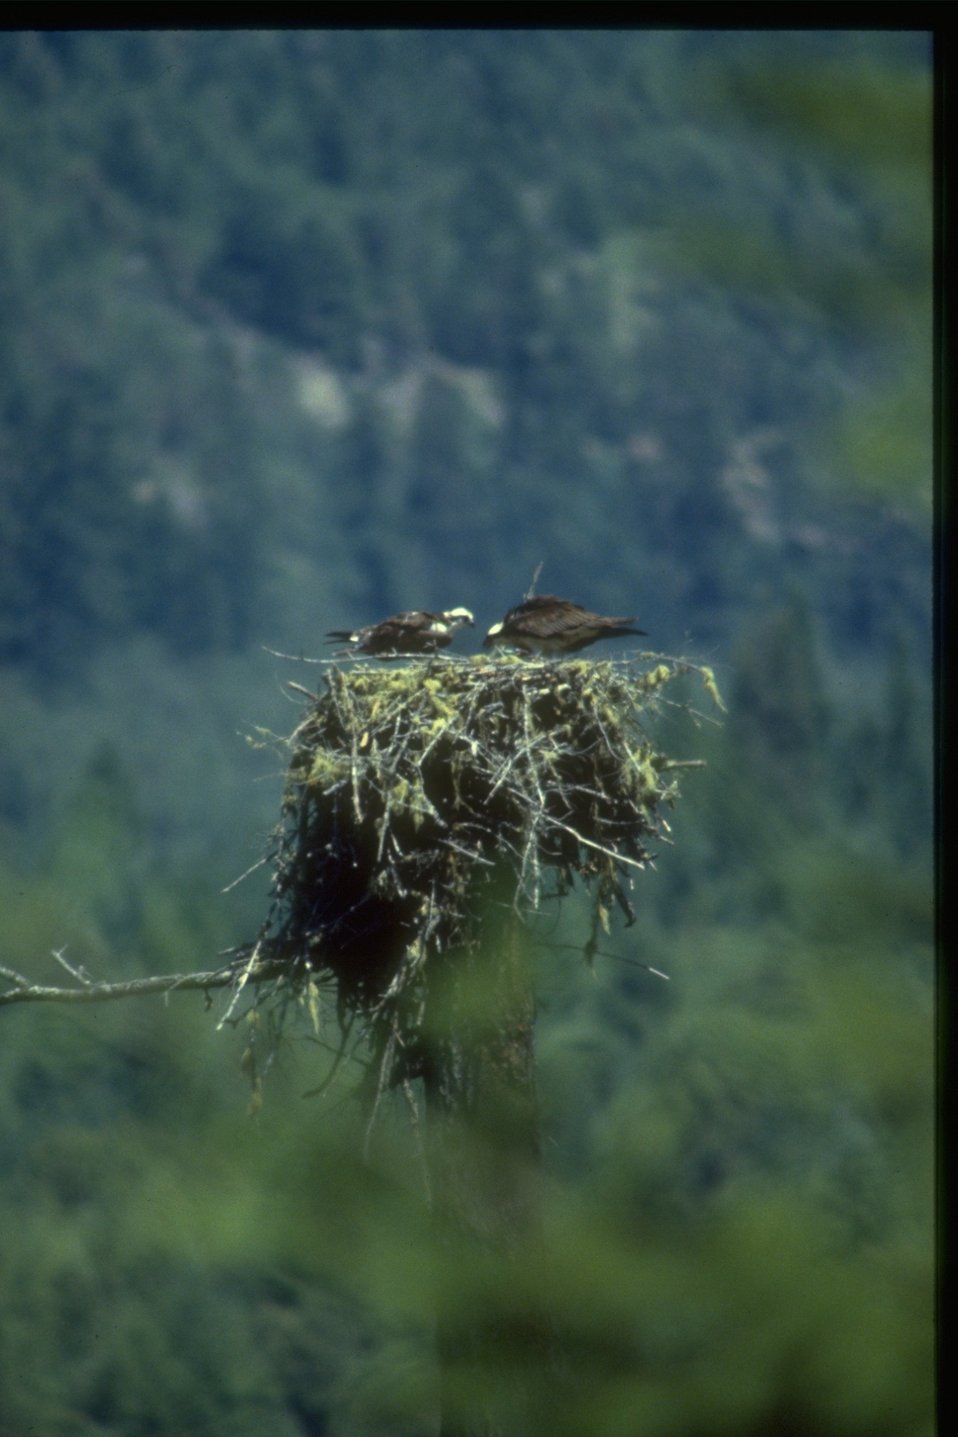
Osprey perched in nest.